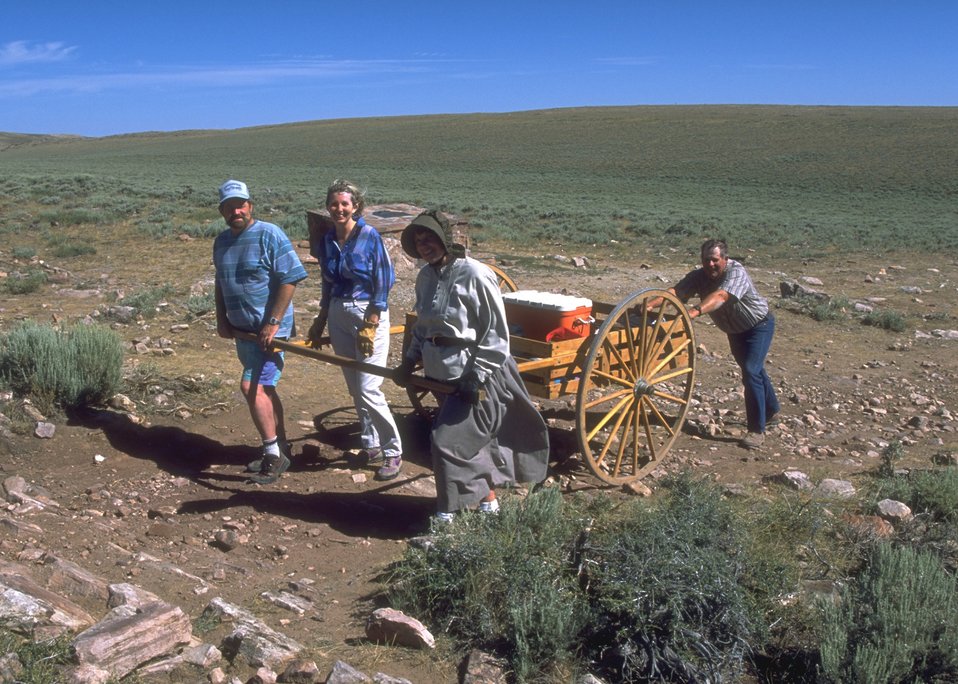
Hand cart re-enactment along the Mormon Trail, Lander Field Office.